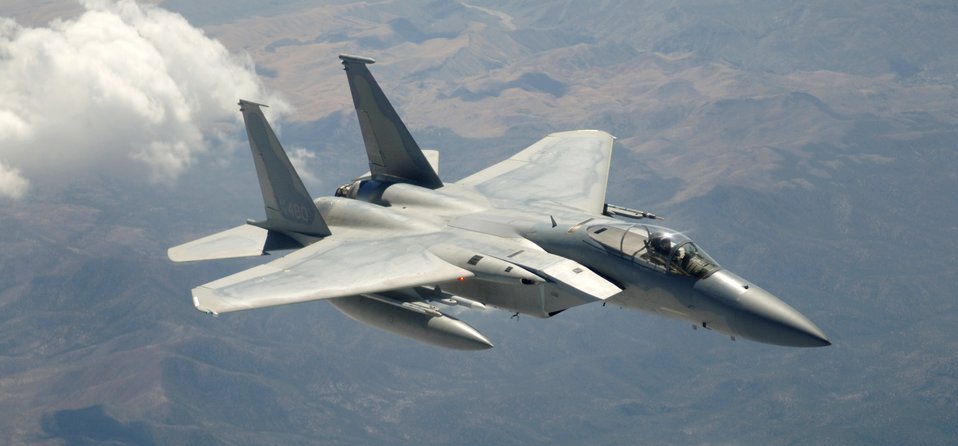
Refuelin' at the flag

An F-15 Eagle from Kadena Air Base, Japan, flies at Red Flag, a two-week exercise that tests and trains servicemembers in real-time combat situations at Nellis Air Force Base, Nev. Red Flag is conducted over the Nevada Test and Training Range, which has more than 2.9 million acres of airspace.